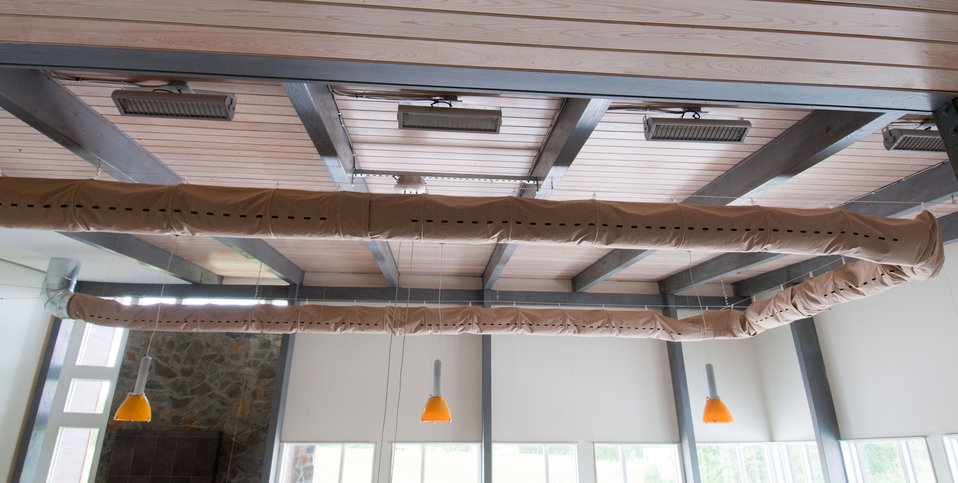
Cooper Vineyards in Louisa, VA, is the first winery on the East Coast and the second in the country to be awarded the fourth and highest, Platinum certification by Leadership in Energy and Environmental Design (LEED).
From a Virginia Wine Board Marketing Office press release, “The process of building a LEED platinum certified building was initially more expensive and arduous than co-owners, Jacque Hogge, MD and Geoffrey Cooper, MD expected, but they were able to get financial assistance from the United States Department of Agriculture. “Know that there are grants available to help with the costs of sustainable building projects,” Hogge advises to other potential green wineries. Cooper Vineyards received 2 of the 3 USDA (U.S. Department of Agriculture Rural Development (RD) Rural Energy Financing program) grants awarded in Virginia in 2010 to help with the expenses of their construction.”
Rural Energy Financing program focuses on loan guarantees, loans and grants to agricultural producers, businesses, cooperatives and rural residents for renewable energy systems and to make energy efficiency improvements.
The tasting room and building collects rainwater from the roof; uses low flow water fixtures to reduce usage by 40%; utilizes structurally insulated panels for the roof and walls; heats and cools the entire building using a geothermal system that includes pipes that are embedded in the parking lot; low-voltage LED lighting with daylight and occupancy sensors provide ample light when it is needed; a solar panel array provides more than 15% of the energy needs for the building, and much of the construction materials are from local and recycled material sources. For more information about USDA please go to www.usda.gov, Rural Development and Rural Energy Financing. LEED was developed by the U.S. Green Building Council (USGBC) is a 501 c3 non-profit organization committed to a prosperous and sustainable future for our nation through cost-efficient and energy-saving green buildings.